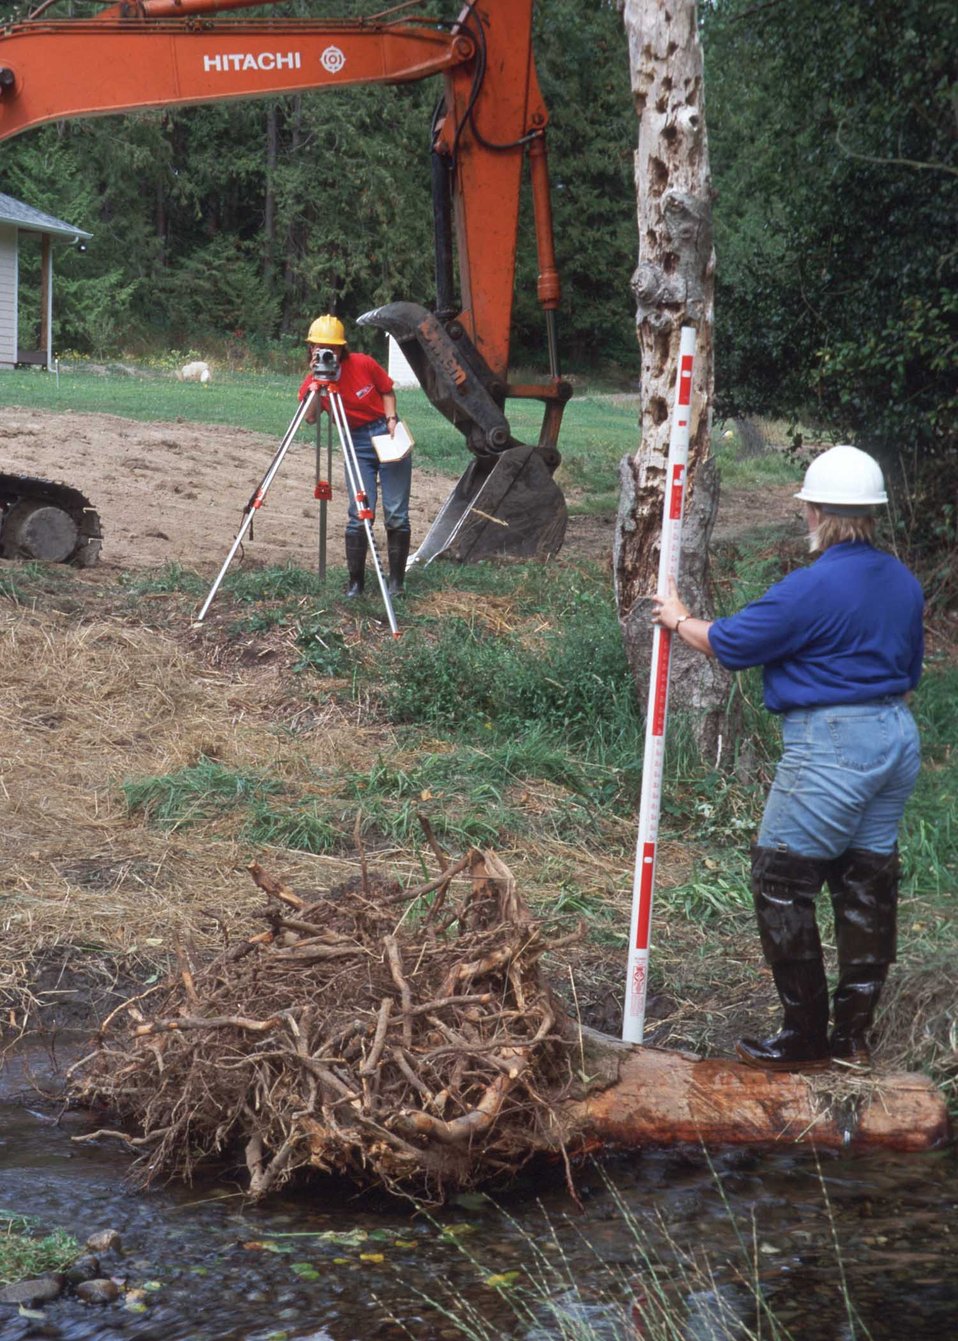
NRCS employee's, Beth and Rachel, monitoring stream depth and structure placement on Dogfish Creek, Washington. This is a Wildlife Habitat Incentives Program (WHIP) to enhance salmon habitat in the stream.